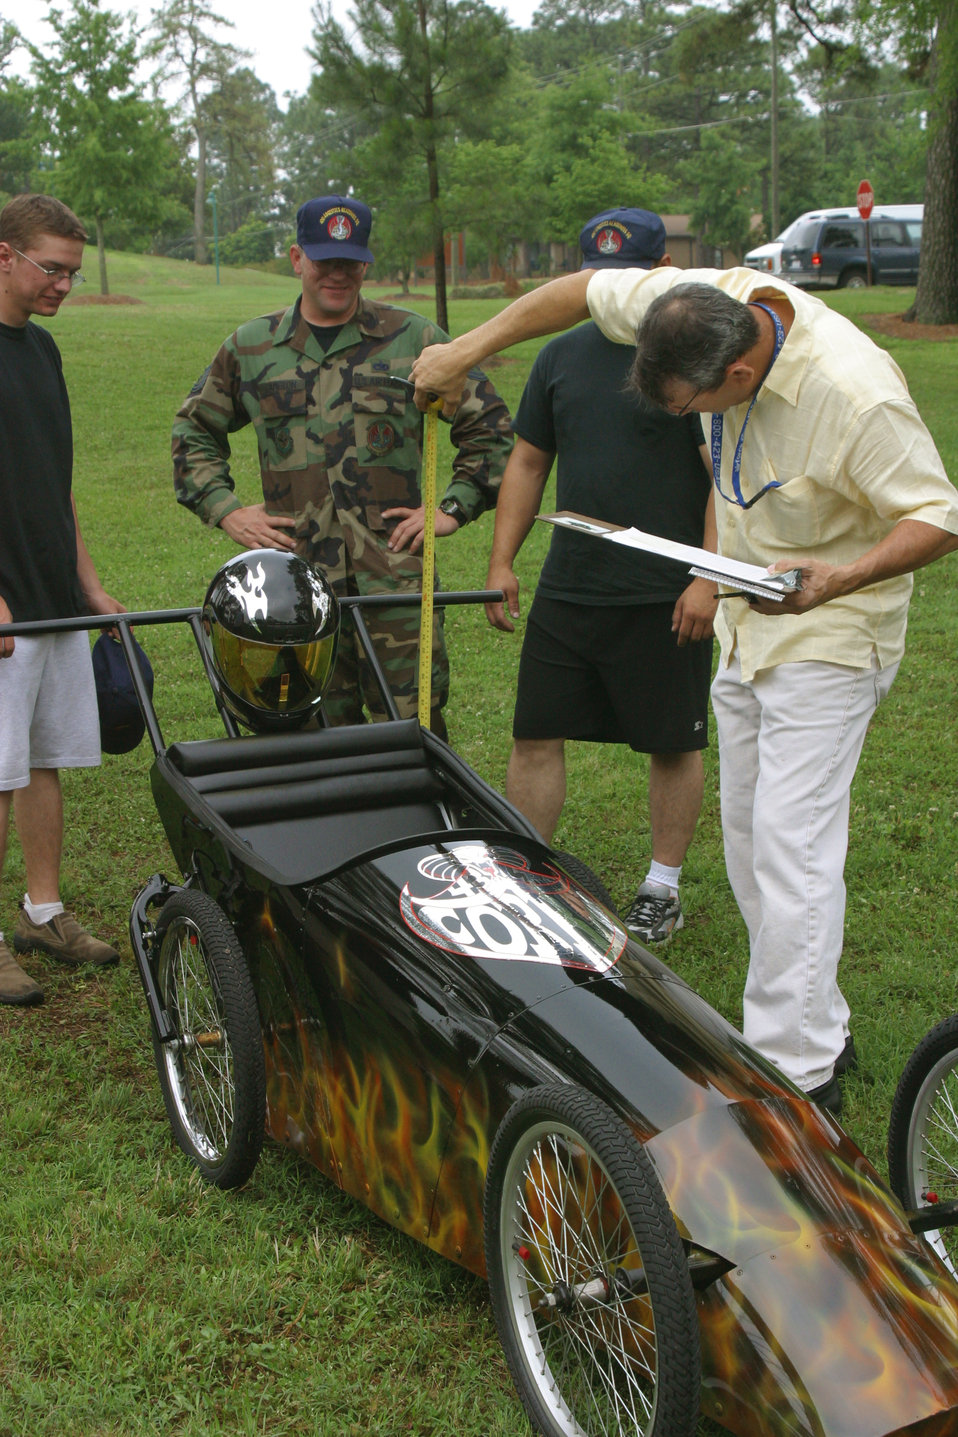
On his soap box

POPE AIR FORCE BASE, N.C. -- A race official inspects the 43rd Logistics Readiness Squadron's car before the Pope Box Derby here recently. The official checked to make sure each car was no more than 30 inches tall, had a brake and steering system, had a push bar and that each rider had a helmet.